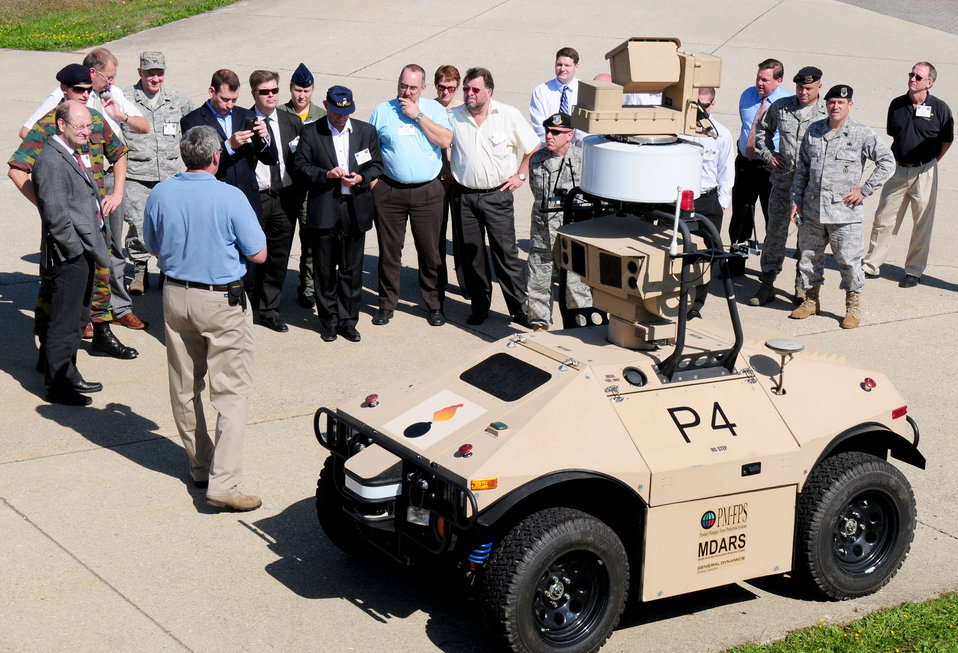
JFPASS

Guests attending the Joint Force Protection Advanced Security System demonstration receive information about a Mobile Detection Assessment Response System Aug. 20, 2010, at Spangdahlem Air Base, Germany. Spangdahlem AB is currently the only operational Department of Defense installation testing the advanced technology system geared toward enhancing force protection capabilities.